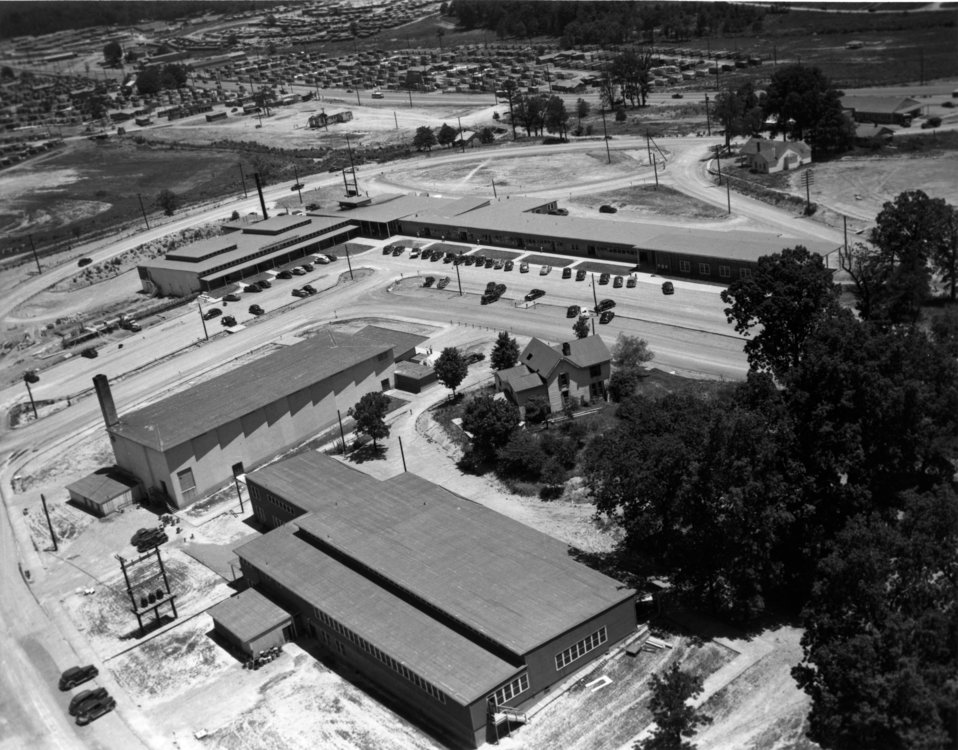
Aerial of Oak Ridge